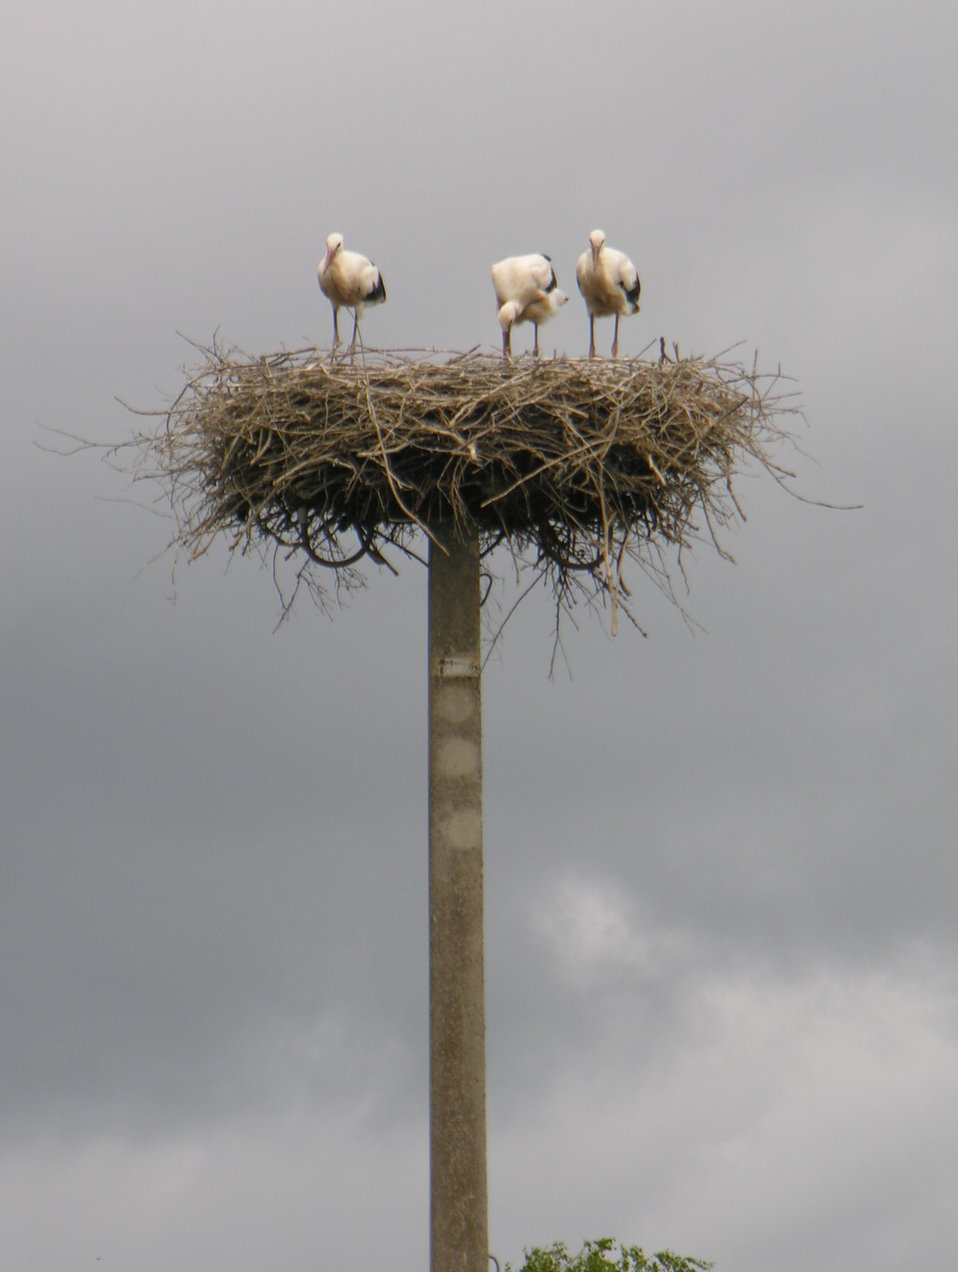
White Storks Latina: Ciconia ciconia